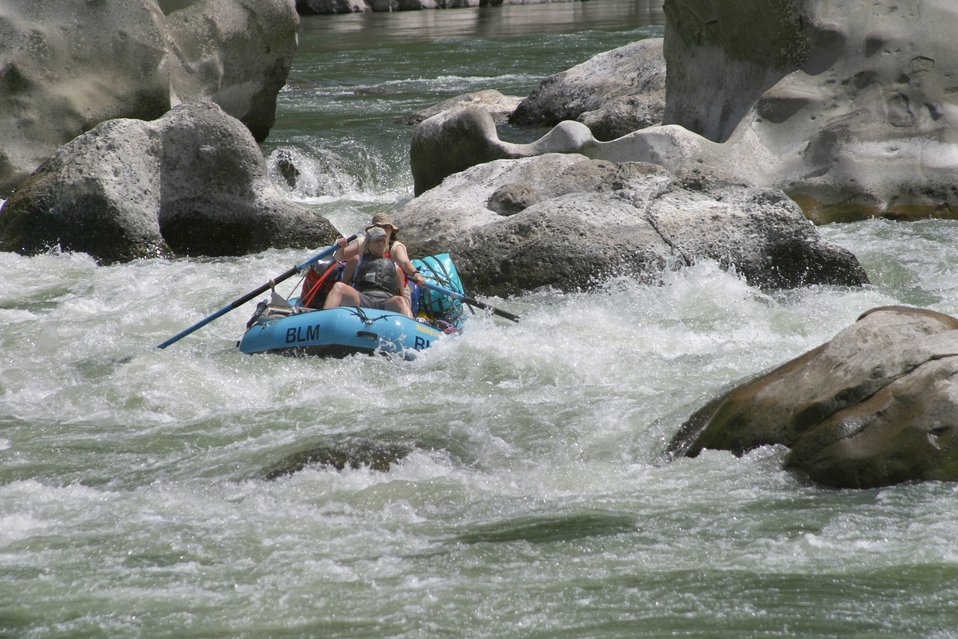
Wild section of the Rogue River from Grave Creek to Foster Bar May 19 to May 22.